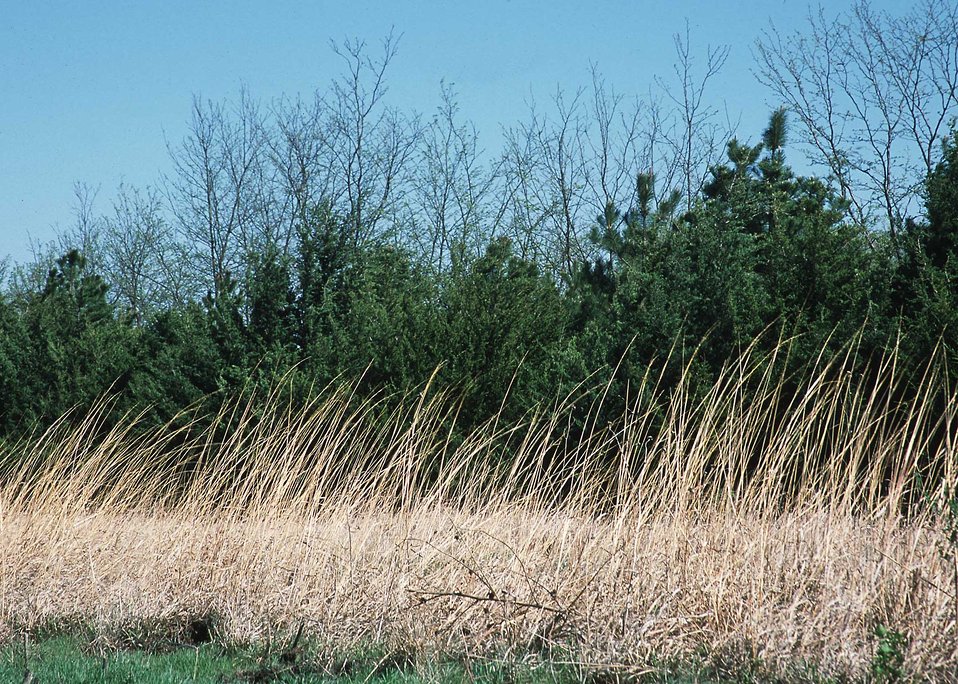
Twelve year old winddbreak installed under the CRP program. Kansas.